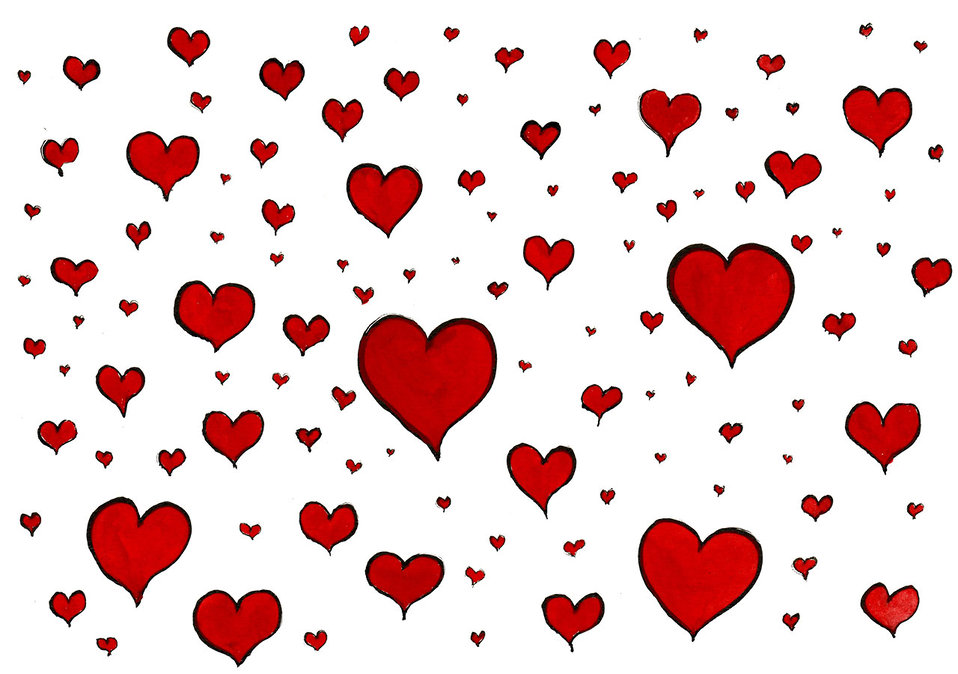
Group of hearts

Sketching hearts.